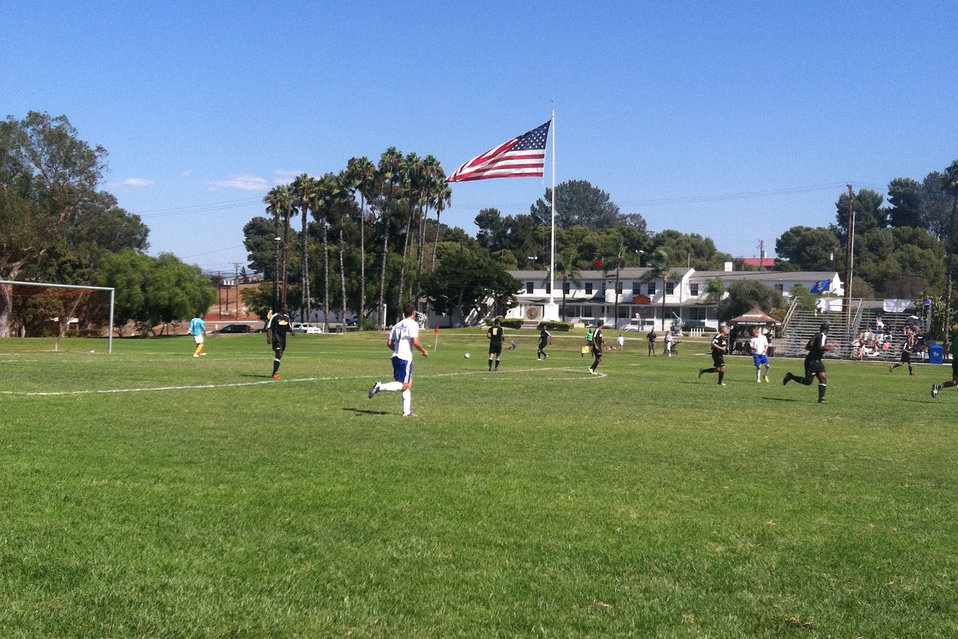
Armed Forces Soccer Championship

The Air Force takes on Army during the championship game of the 2012 Armed Forces Soccer Championship. The Air Force went undefeated throughout the tournament and brought home gold for the second year in a row.